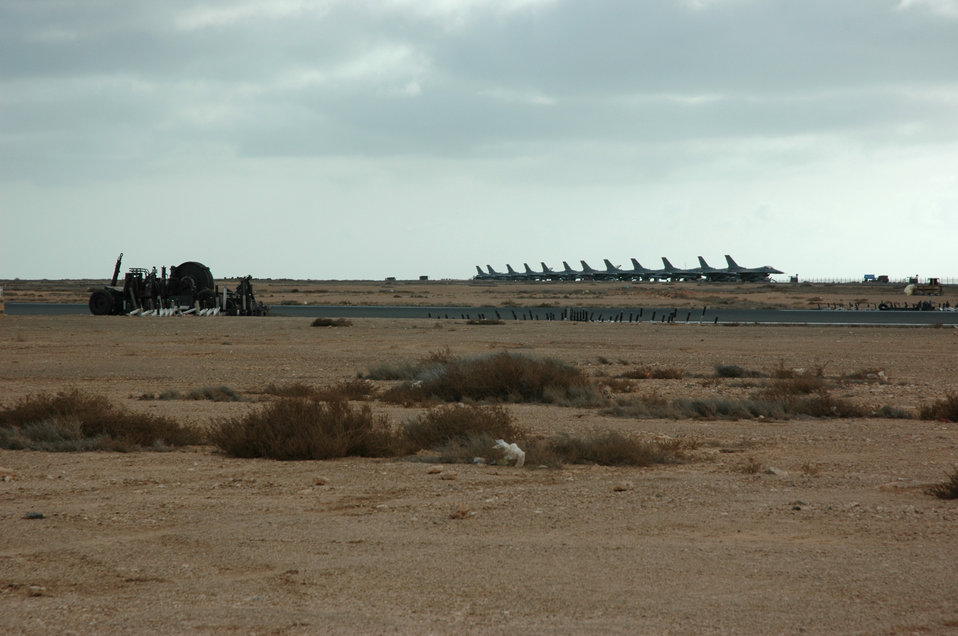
NATO troops exercise at Steadfast Jaguar

F-16 Fighting Falcons from the 22nd Fighter Squadron at Spangdahlem Air Base, Germany, are deployed to Sal, Cape Verde, for NATO's Exercise Steadfast Jaguar. More than 7,000 NATO servicemembers from land, maritime and air components are participating in the exercise, which ends today.